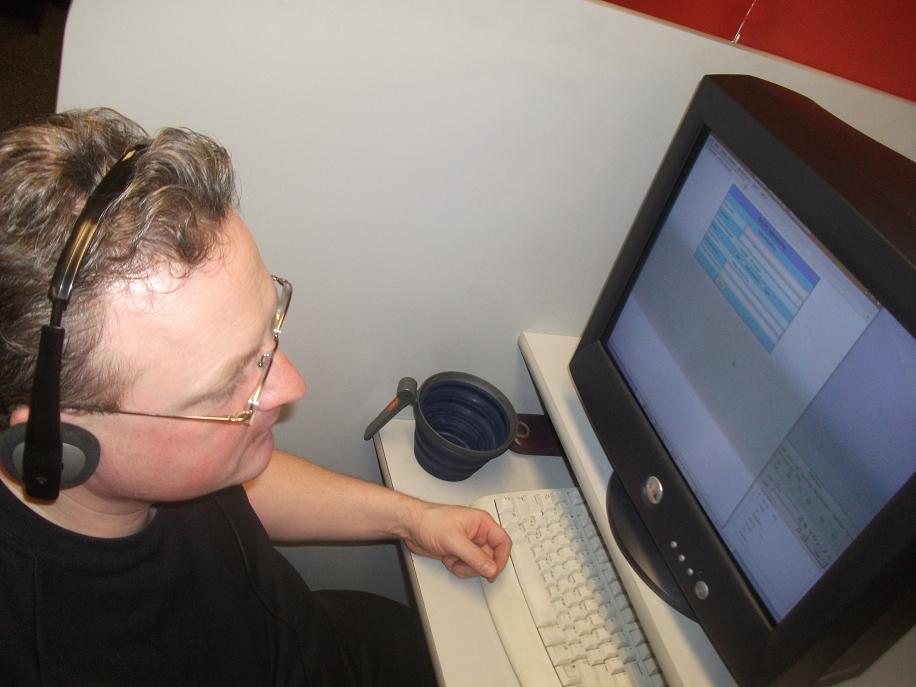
Summary: Call centre employee